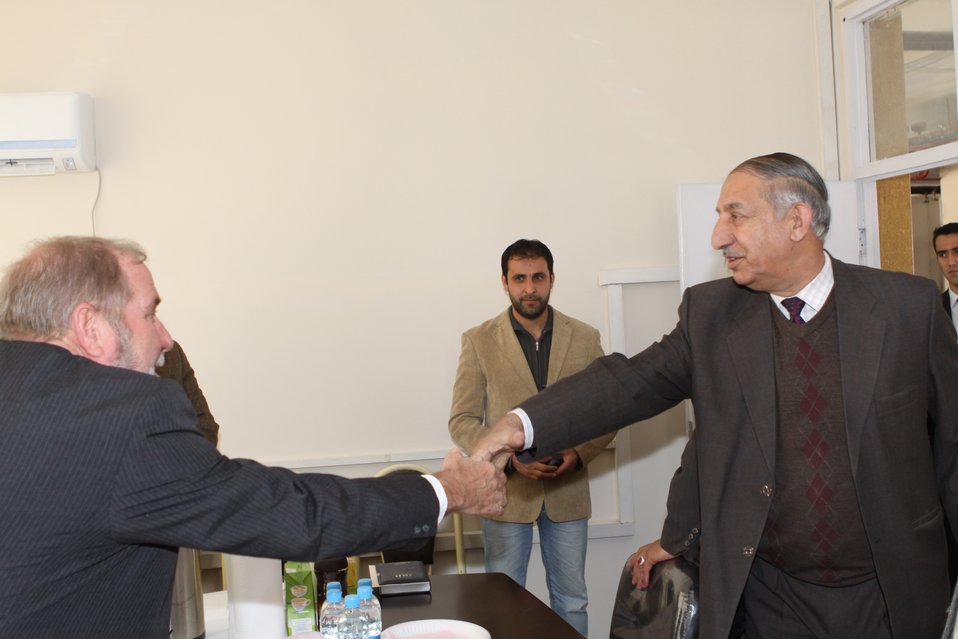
Female University Students Complete Internship

Kabul, Afghanistan | March 16, 2011 – In response to a demand for qualified Afghan engineers, Kabul University celebrated completion of an intensive five-month Mentor Protégé Training Program today by 10 female fourth year university students. The Training Program is a joint effort between the Government of the Islamic Republic of Afghanistan, the U.S. Agency for International Development (USAID), and the Universities of Kabul, Kandahar, Alberoony in Kapisa, Shiekh Zayed in Khost. The graduation ceremony highlighted collaboration with these national institutions in building the technical skills of young Afghans, made possible by USAID.

Four of the interns are engineers, while the remaining six are from the faculties of computer science, economics, and psychology.

Speaking about the event, H.E. Minister of Public Works Abdul Qudus Hamidi said, “The future of Afghanistan lies in developing the skills of our youth, and the engineering skills of these graduates today represent a small but important step forward for the country.”

Keynote speakers at the ceremony included H.E. Deputy Minister of Higher Education Abdul Rahim; USAID Senior Deputy Mission Director Robert Hellyer; and Chancellor of Kabul University Professor Hamidullah Amin. Approximately 150 people, including current and former students attended the graduation.

Launched last year, the Mentor Protégé Training Program has provided qualifying students the opportunity to intern with USAID’s Strategic Provincial Roads-South and East Afghanistan project and gain practical experience in a real work environment. The goal of the program was to offer interns the opportunity to gain hands-on experience to reinforce their formal studies. A total of 30 students from four national universities have benefitted from this program.

“The promotion of women’s rights is integrated into the overall U.S. Government development strategy and can be found in key programs, including education, healthcare, security, rule of law, political participation, agriculture, and economic development,” said Robert Hellyer. “The U.S. Government is committed to the Afghan leadership of programs that directly enhance development, particularly as it relates to women’s issues.”

This event also highlighted the learning achievements of students and emphasized the importance of hands-on internship programs. The curriculum is designed to instill students with the knowledge and confidence to qualify for engineering positions upon completion of their fourth year at their respective universities.